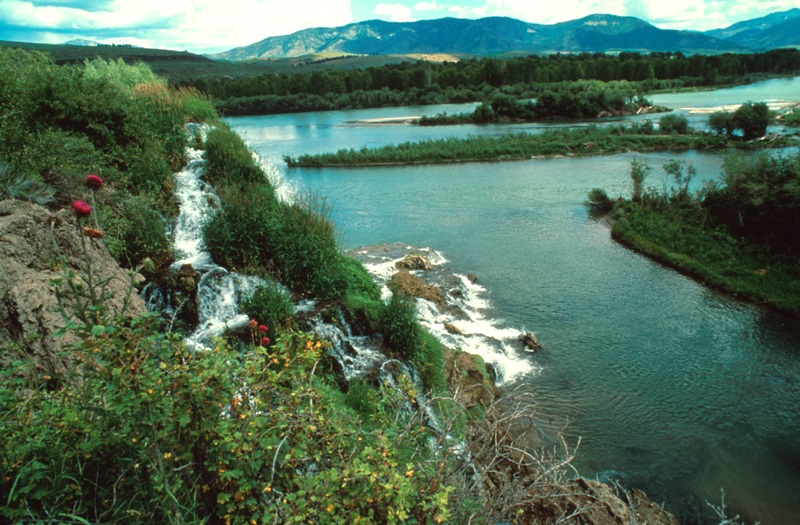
Fall Creek Falls Snake River Canyon